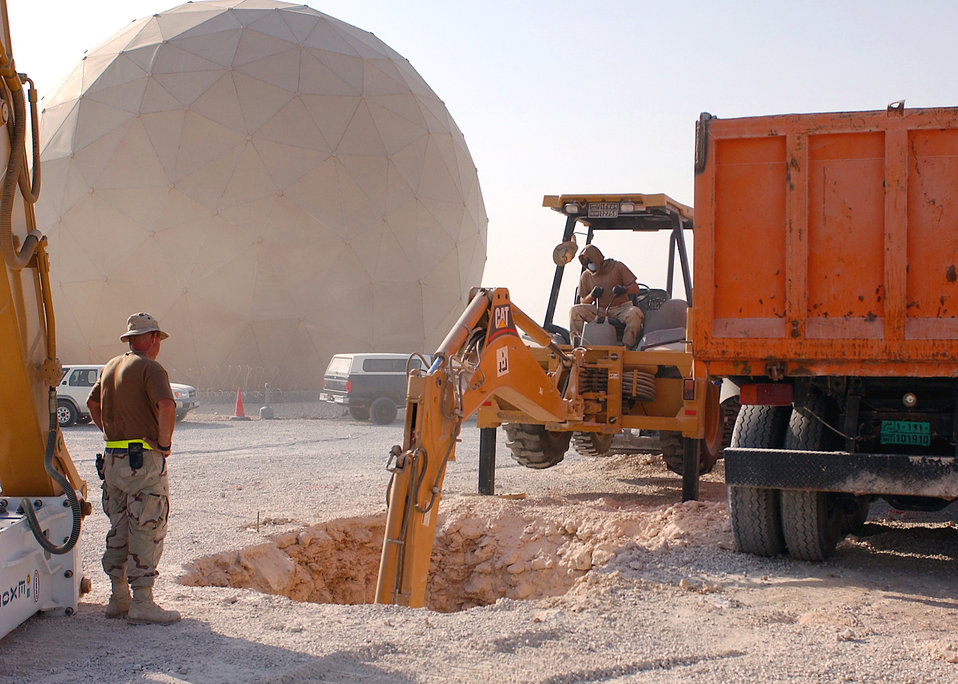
Digging in the sand

AL UDEID AIR BASE, Qatar -- Senior Master Sgt. Thomas Sattazahn watches as Tech. Sgt. Carl Castell digs a manhole that will house underground cables for the 379th Expeditionary Communications Squadron.